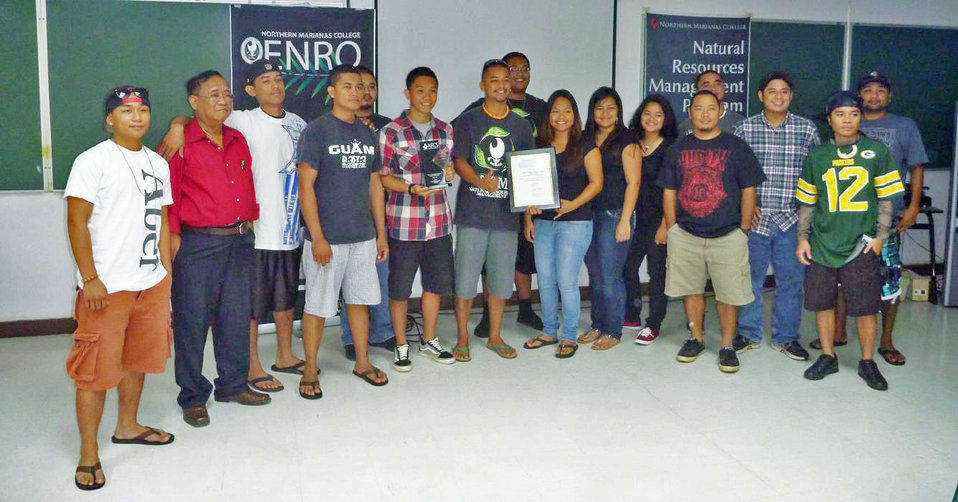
Saipan 1-a

Northern Marianas College Environmental and Natural Resource Organization (ENRO) students won the 2012 U.S. Department of Agriculture’s (USDA) Natural Resources Conservation Service (NRCS) Earth Team group volunteer award for their environmental work in Saipan. In 2012, to mark the 150th anniversary of the Agriculture Department’s founding, ENRO volunteered to weed around saplings planted as part of a watershed re-vegetation conservation plan. Even a heavy rain did not dampen the volunteer spirit and the students spent the entire day out in the rain, weeding around 10 acres of native trees.